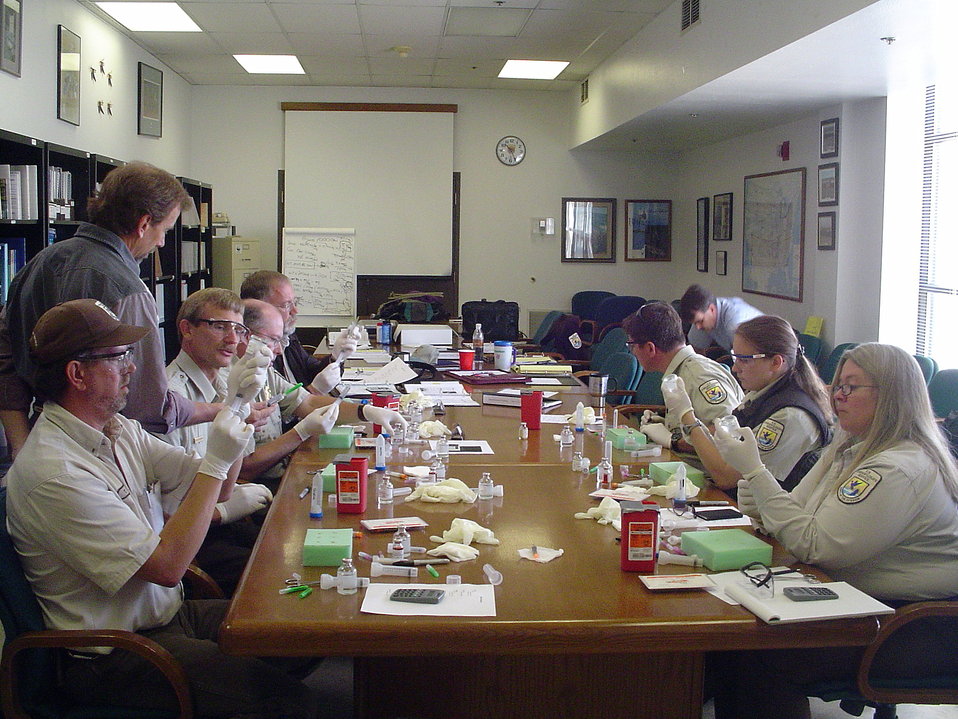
Chemical Immobilization Training

Staff at Rocky Mountain Arsenal participate in a chemical immobilization training conducted by Dr. Tom Roffe. We offer training for refuge staff in several topics including chemical immobilization, basic necropsy, and disease sampling techniques.